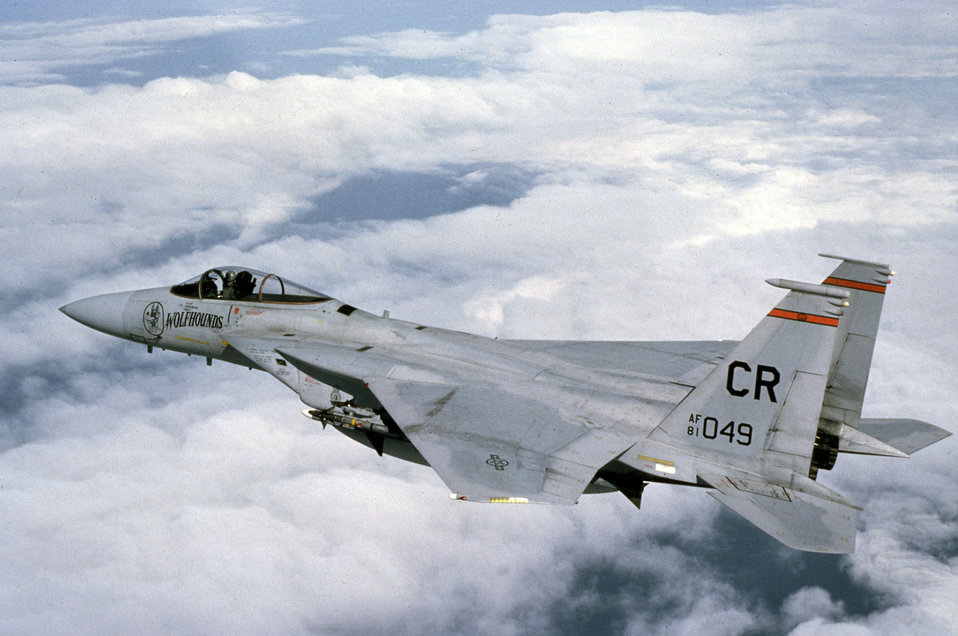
F-15 Eagle

1970s -- The first F-15 Eagle flight was made in July 1972.